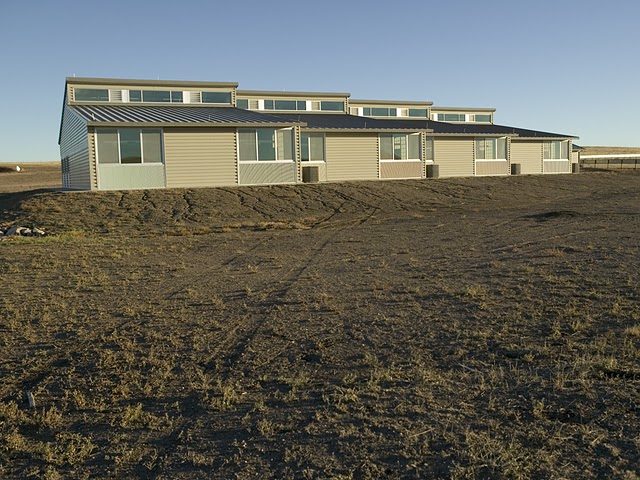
National Black-footed Ferret Conservation Center